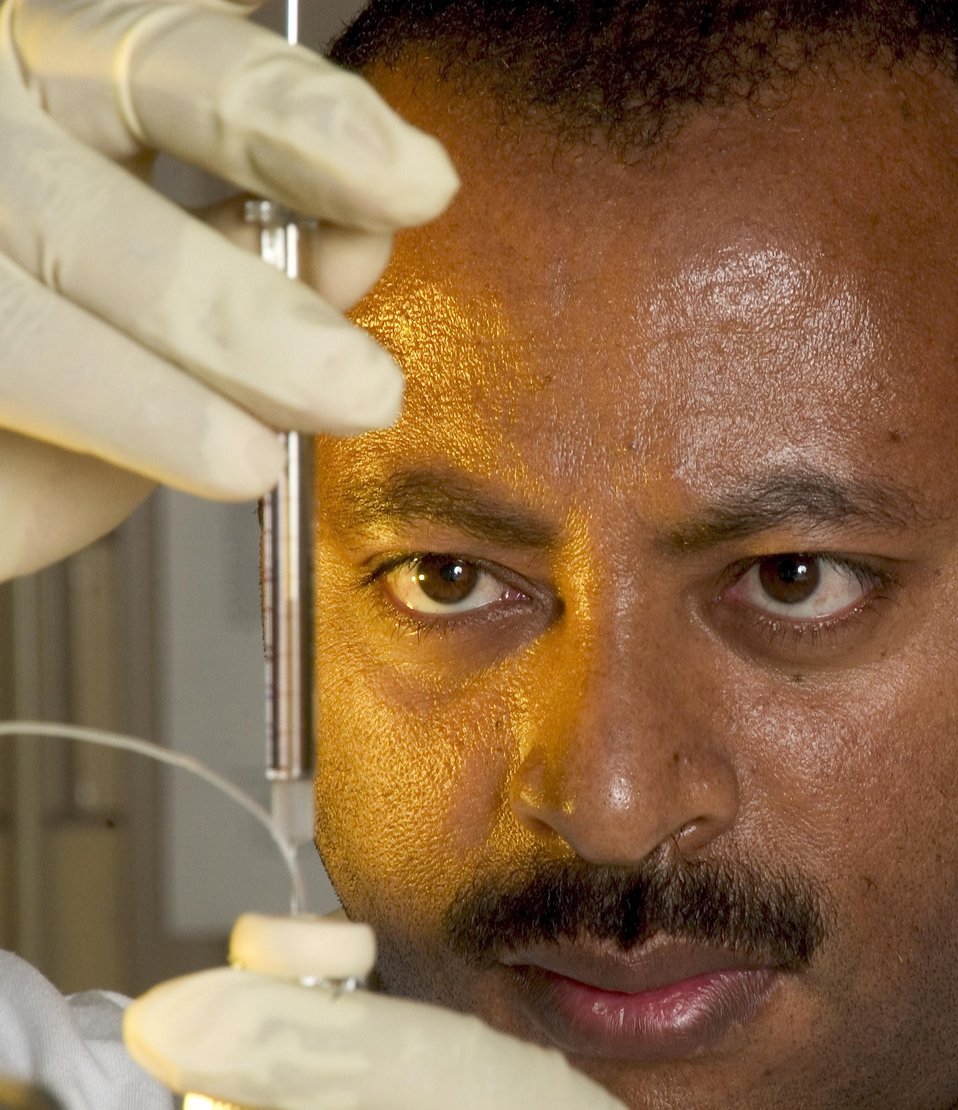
An Ames Laboratory postdoctoral fellow, uses a microliter syringe to withdraw a sample of chromium complex. The procedure is a familiar one in studying the material's reactivity in oxygen activation.